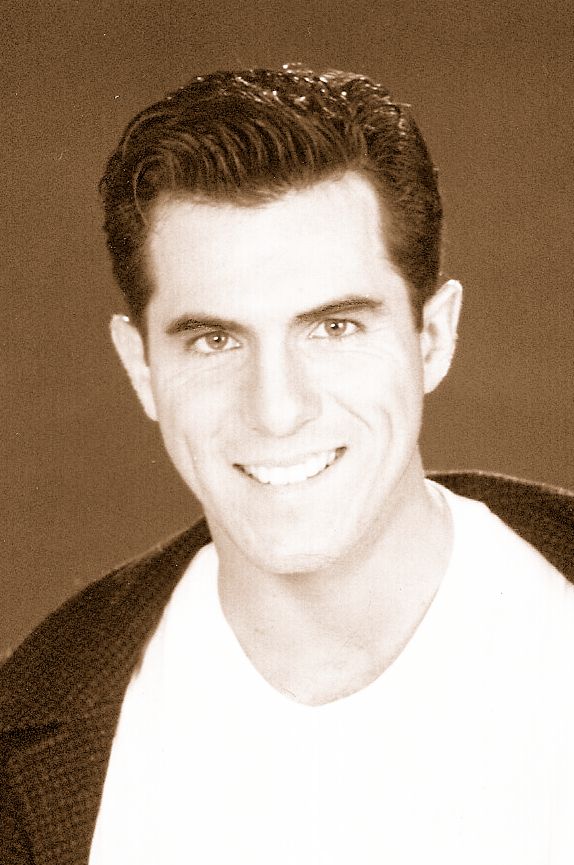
My pic of Gabriel taken in 1989
I TOOK THIS PICTURE OF MY ROOMMATE, GABRIEL TRAVERSARI